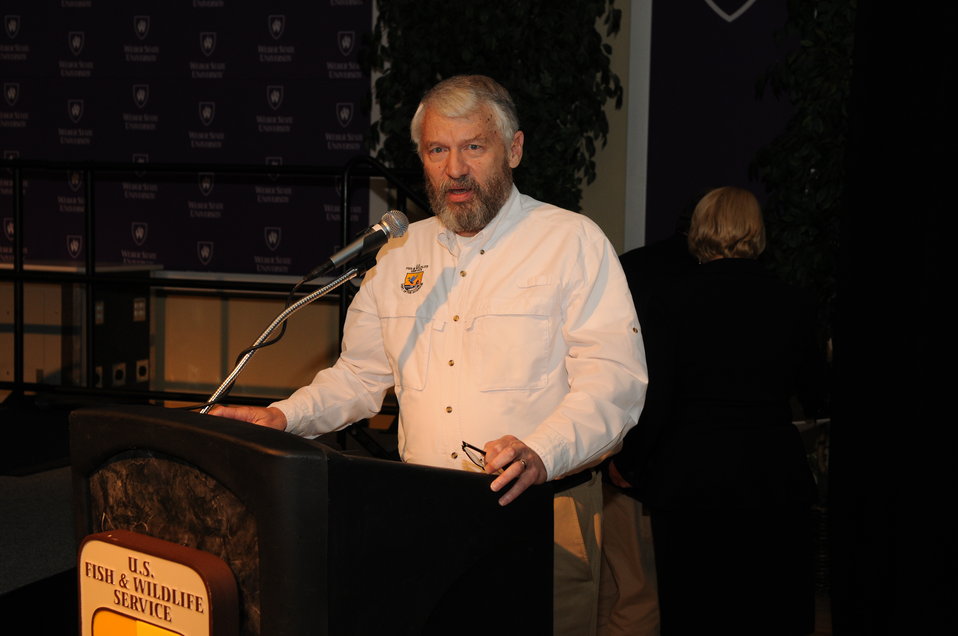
Final Remarks

The U.S. Fish & Wildlife Service sponsored the 2012 Federal Duck Stamp Art Contest September 28 and 29 in Ogden, Utah, at Weber State University. A panel of five judges was responsible for choosing the art work used to design the 2013-2014 Migratory Bird Hunting and Conservation Stamp.